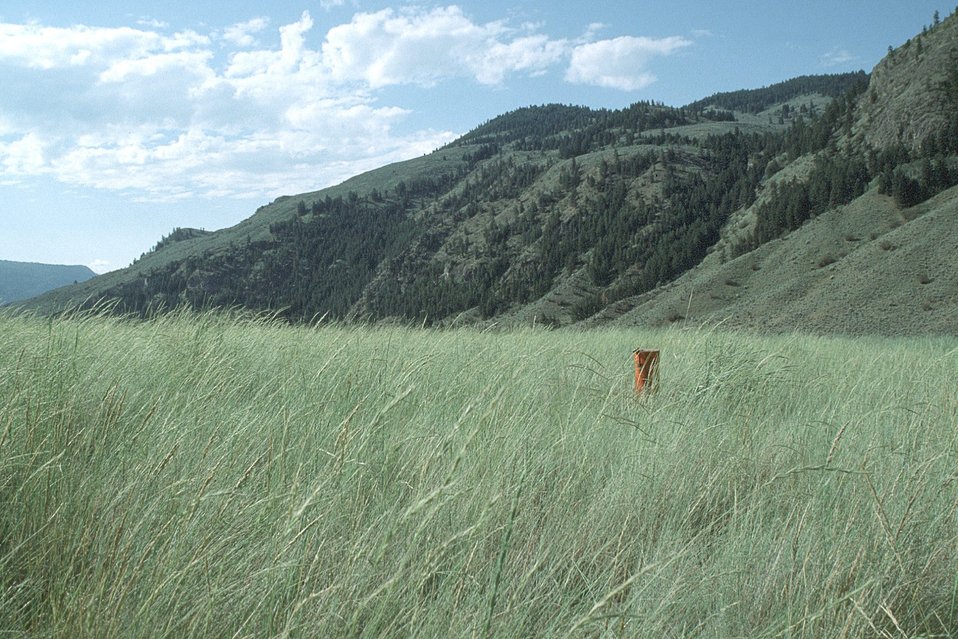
Landfill Rehab, Orville, Washington.